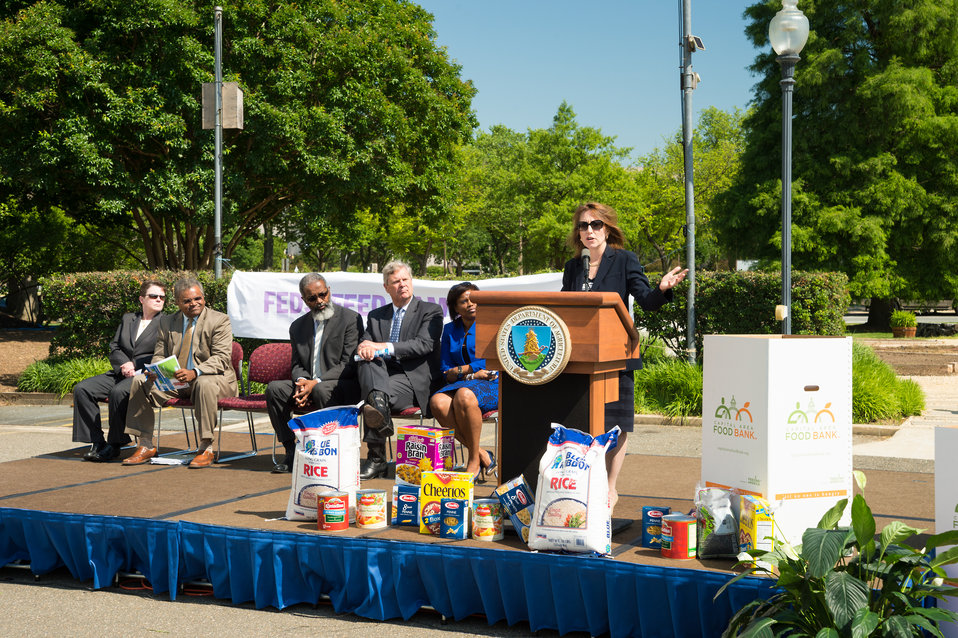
Nancy Roman, President and Chief Executive Officer, Capital Area Food Bank addressed the need for surplus food donations to assist those who suffer from hunger and educating the community about the issues of hunger and nutrition at the 2014 National Feds Feed Families Kick-Off at the United States Department of Agriculture’s (USDA’s) People’s Garden in Washington, DC, Mon. Jun. 2, 2014. On stage behind Ms. Roman are Pamela Mitchell, Deputy Chief Human Capital Officer, Department of Defense, Mathy Stanislaus, Assistant Administrator for the Office of Solid Waste and Emergency Response, Environmental Protection Agency, Dr. Gregory Parham, Assistant Secretary for Administration, Agriculture Secretary Tom Vilsack and Karen Comfort, National Program Manager, Feds Feed Families.